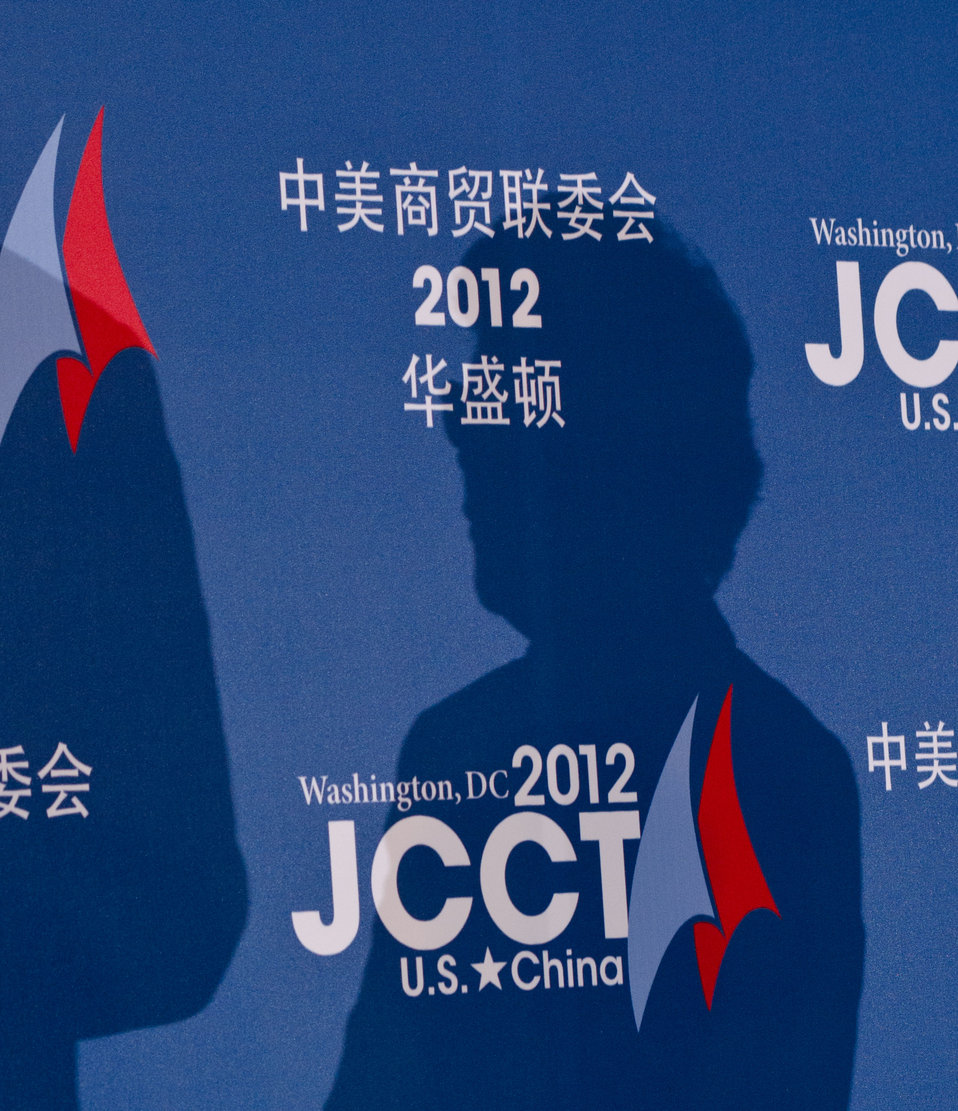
The 23rd Session of the U.S. China Joint Commission on Commerce and Trade (JCCT) logo with shadow, at the Andrew W. Mellon Auditorium in Washington, D.C. on Wednesday, Dec. 19, 2012. The JCCT holds high-level plenary meetings on an annual basis to review progress made by working groups that focus on a wide variety of trade issues. These working groups meet throughout the year to address topics such as intellectual property rights, agriculture, pharmaceuticals and medical devices, information technology, tourism, commercial law, environment, and statistics. Established in 1983, the JCCT is the main forum for addressing bilateral trade issues and promoting commercial opportunities between the United States and China. The 2011 JCCT meeting was held in Chengdu, China, where China agreed, among other issues, to improve intellectual property enforcement, delink innovation policies to government procurement preferences, and provide a fair and level playing field in China’s Strategic Emerging Industries.